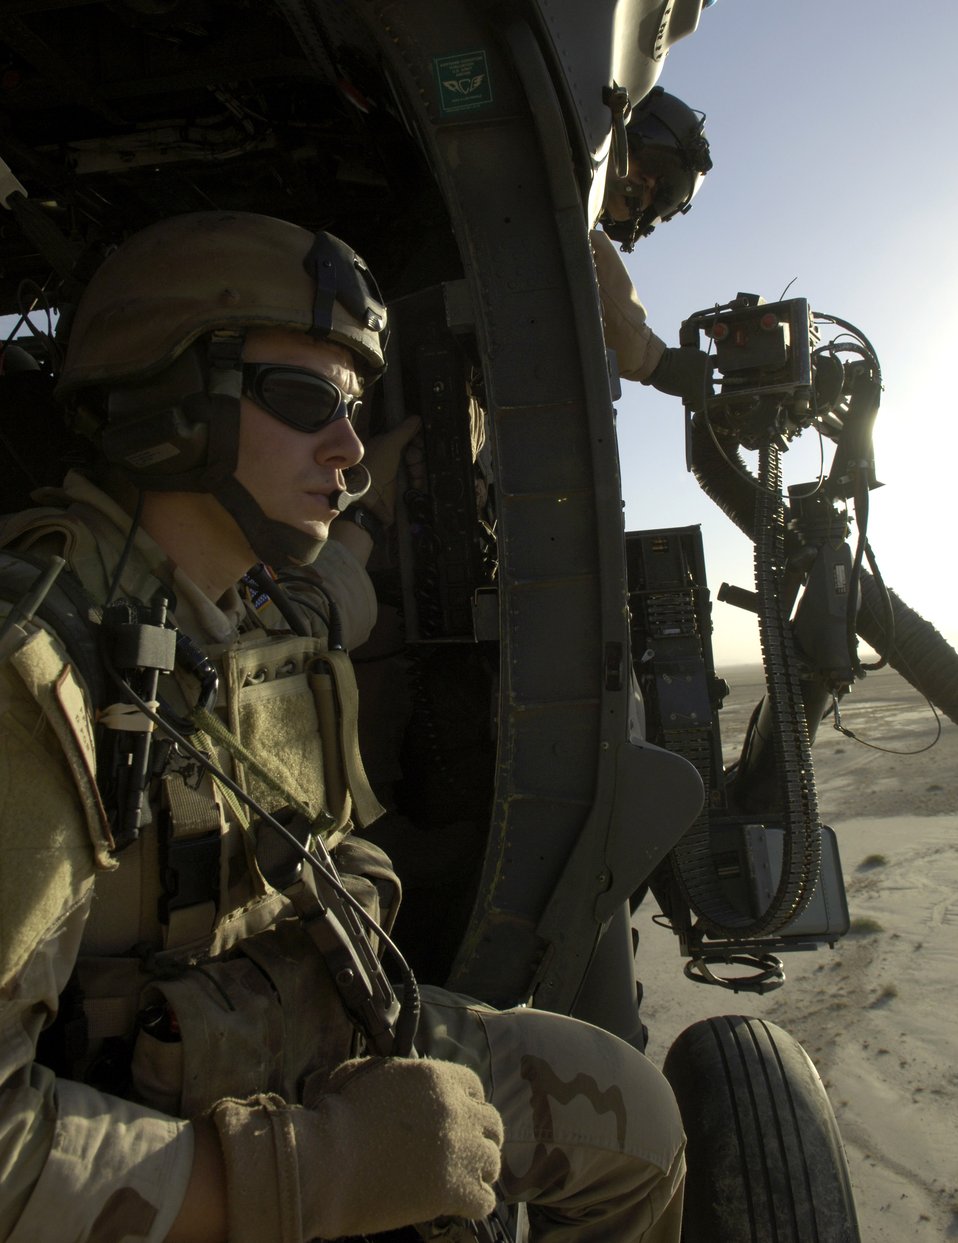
Air Force aids Army with medevac missions

A pararescueman from the 33rd Expeditionary Rescue Squadron keeps watch out the door of an HH-60 Pave Hawk helicopter as it flies over Afghanistan June 11. The 33rd ERQS is the first squadron to have a combat-search-and-rescue mission and a medevac mission, and is based at Kandahar, Afghanistan.